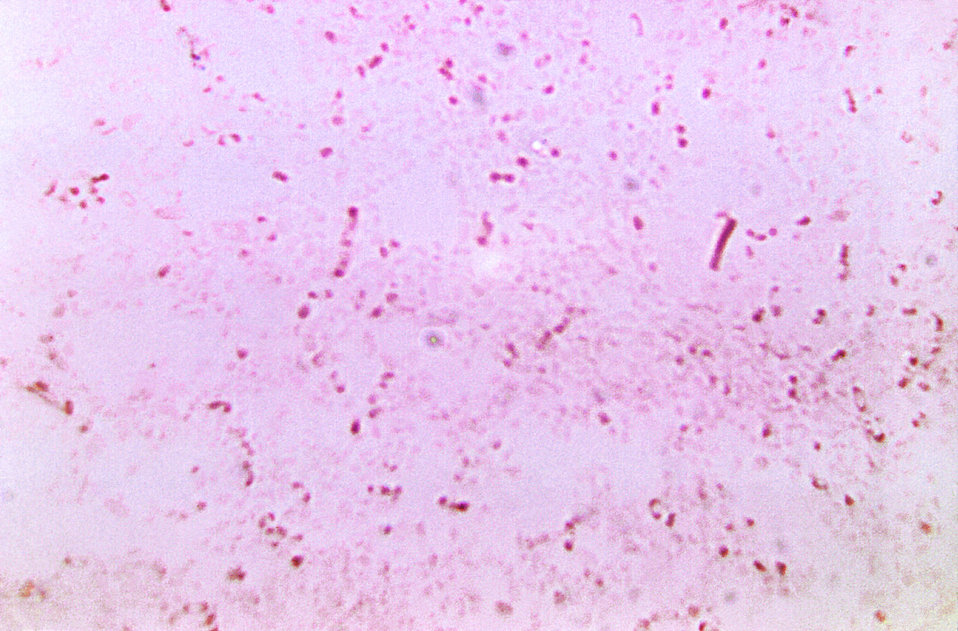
This micrograph depicts the gram-negative bacterium, Fusobacterium mortiferum cultured in blood agar for 48 hours.